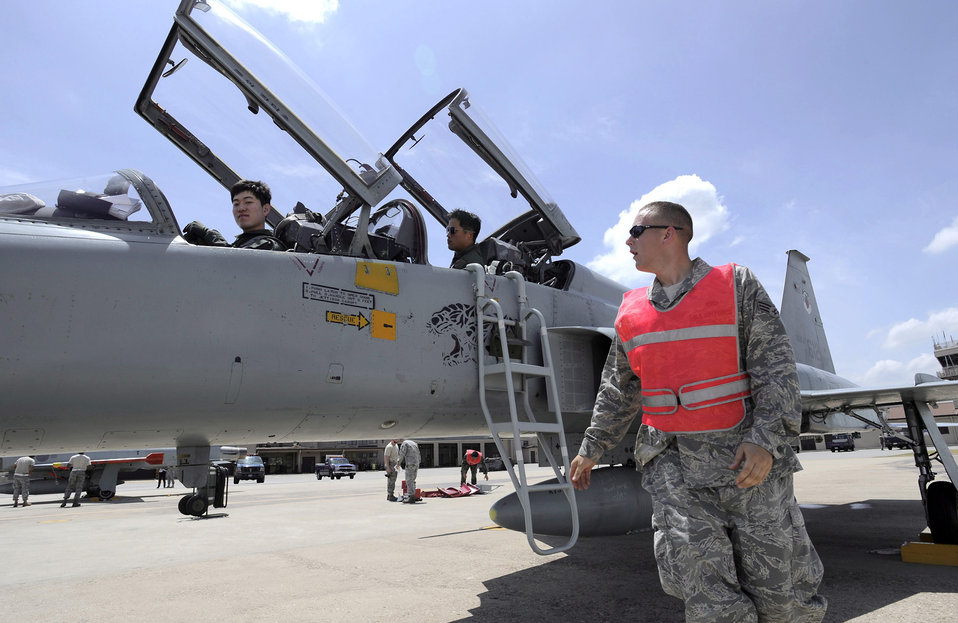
Osan cross-servicing program fosters good relations

Senior Airman Sean Rindfleisch looks on as two South Korean air force pilots prepare to exit an F-5 Tiger II Aug. 10 at Osan Air Base, South Korea. Airman Rindfleisch is servicing the F-5 as part of the Osan AB combat cross-servicing program. The program is a mutual agreement between the U.S. and South Korea that allows the maintainers from both services to get hands-on experience working on each other's aircraft.